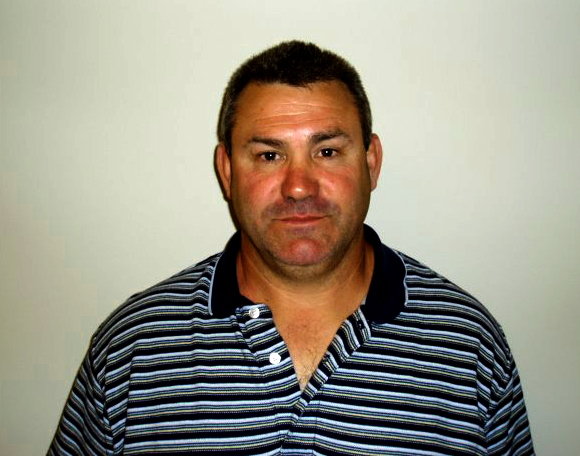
Michael Heck, Engineering Equipment Operator at Duck River unit, served the U.S. Navy’s Construction Battalion (SeaBees) on Active Duty from 1977 until retirement in 1995. He mobilized and deployed to various sites around the world in support Marine Corps operations and natural disaster response.